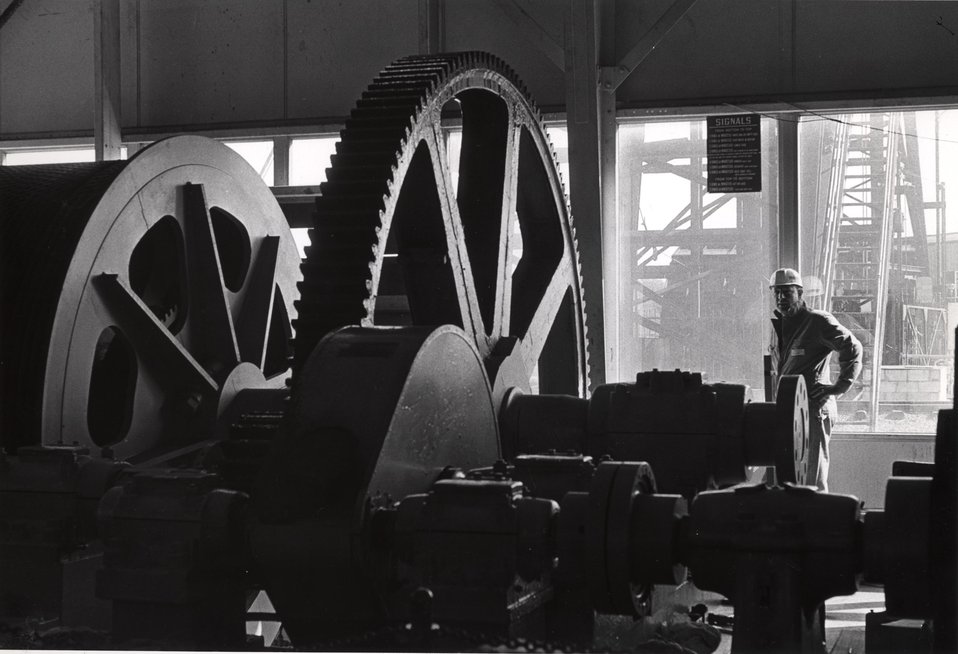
Massive equipment on the surface at Old Ben Coal Co.'s mine #21 at Sesser, Ill., automatically hoists the elevators which carry men, machines and coal up and down in the mine shaft. c. 1966